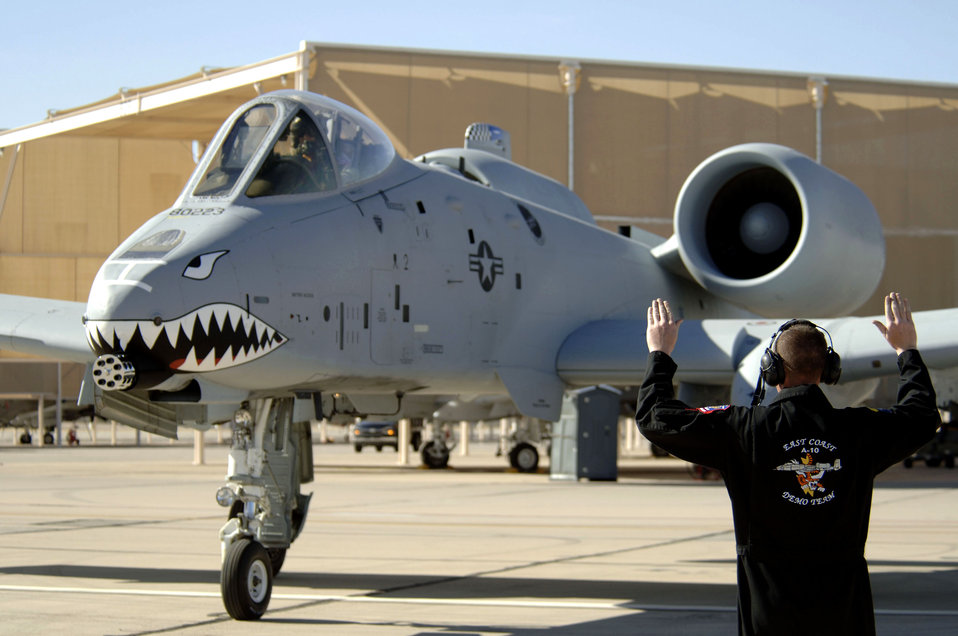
Demonstration team excels at Heritage Conference

An Air Combat Command East Coast Demonstration Team crew chief marshals an A-10 Thunderbolt II after an aerial demonstration flight March 3 at the 2007 Heritage Conference at Davis-Monthan Air Force Base, Ariz. The conference provides an opportunity for ACC demonstration pilots to train together with modern and historic military aircraft in preparation for the upcoming air-show season. The East Coast team is assigned to the 4th Fighter Wing at Pope AFB, N.C.